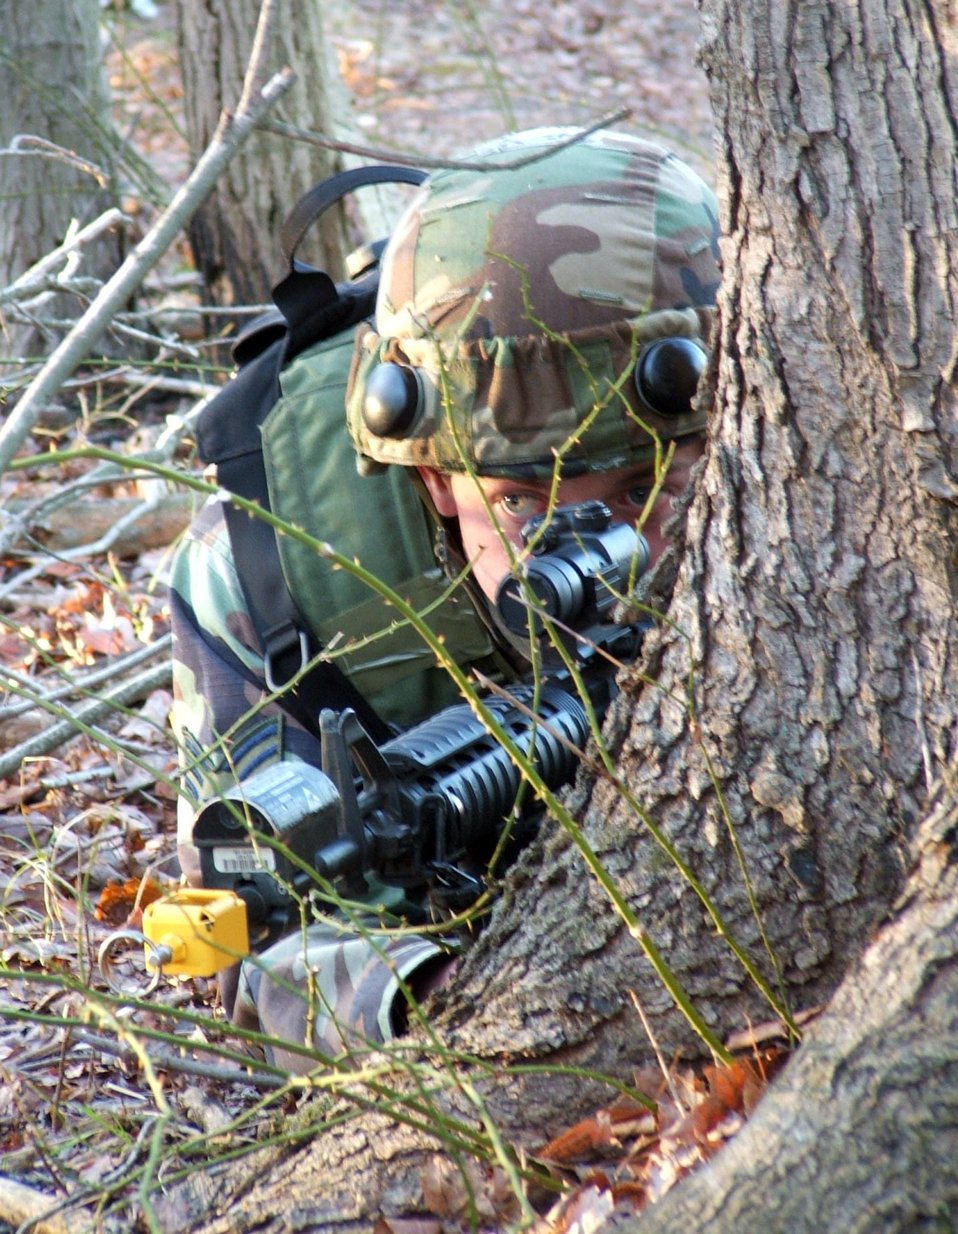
Contingency skills course

FORT DIX, N.J. (AFPN) -- An Airman participating in Air Force Integrated Contingency Skills Training Course 06-1 here takes up a position in the woods during a training session on combat patrol and tactics on a range. The CST course has more than 100 Airmen from multiple Air Force career fields participating and is taught by the Air Mobility Warfare Center's 421st Combat Training Squadron. The training teaches Airmen everything from combat tactics and patrolling to convoy operations and combat first aid.